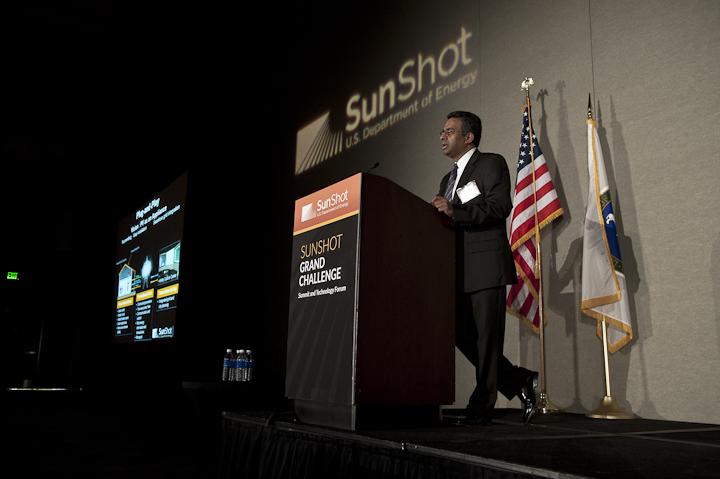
SunShot Director

June 14, 2012- R. Ramesh, Director, SunShot Initiative, U.S. Department of Energy speaks at the plenary session at the SunShot Grand Challenge Summit and Technology Forum in Denver, Colorado.